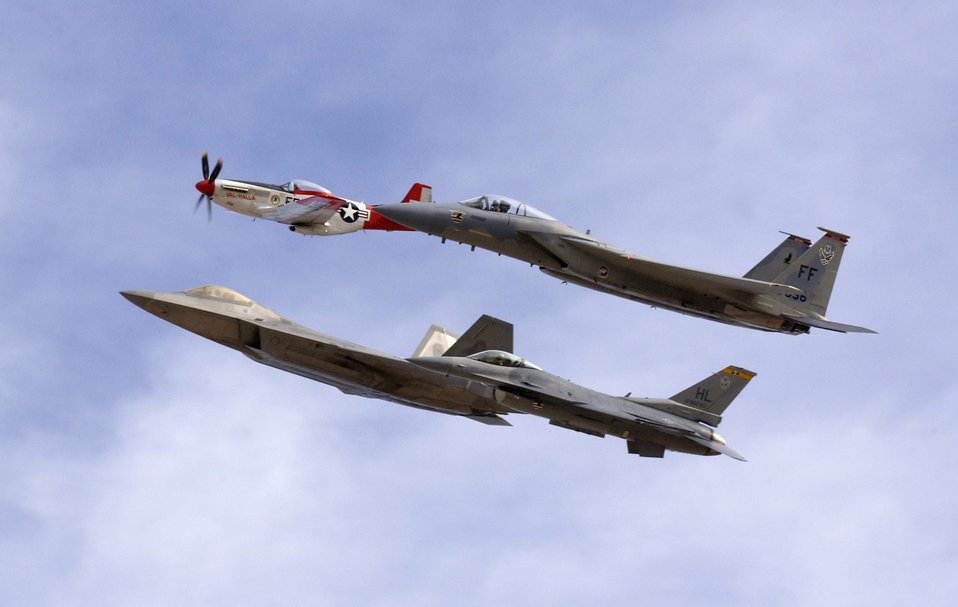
Aviation Nation at Nellis

The Air Combat Command heritage flight consisting of a F-22 Raptor, F-15 Eagle, F-16 Fighting Falcon, and a P-51 Mustang perform a formation fly-over during Aviation Nation 2006 Nov. 12 at Nellis Air Force Base, Nev. Aviation Nation is one of the largest aviation events in North America.